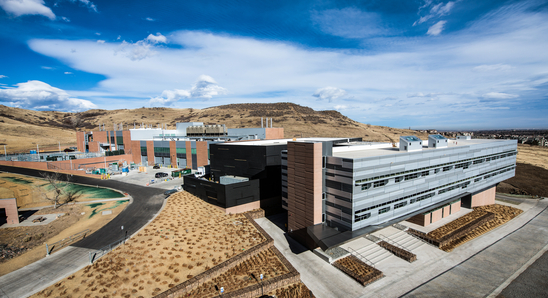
Energy Systems Integration Facility (ESIF) Construction

December 5, 2012 - Energy Systems Integration Facility (ESIF) at the National Renewable Energy Laboratory in Golden, Colorado.